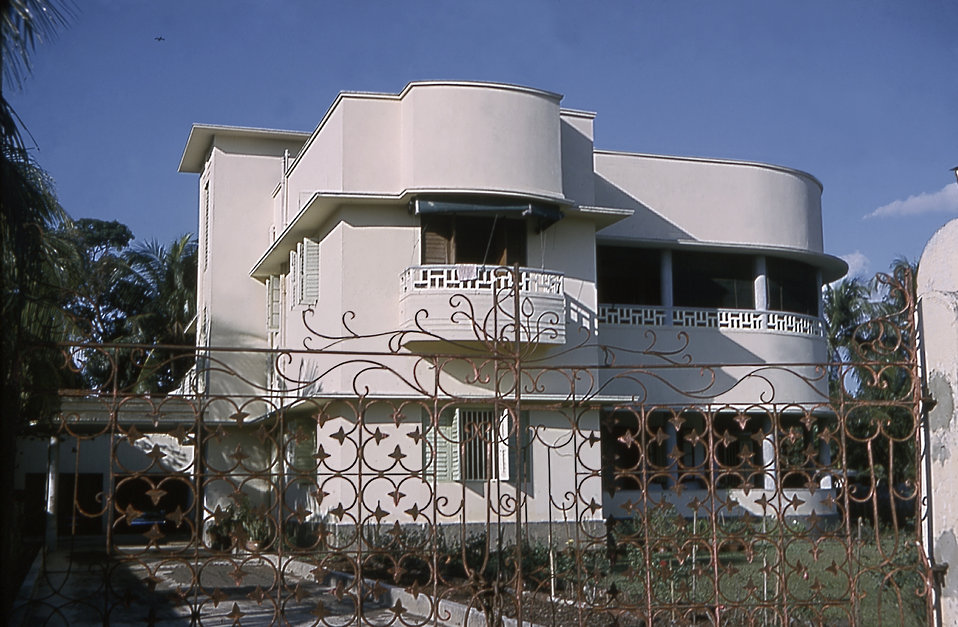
This 1964 image depicts the Old Reed Hill House located in Dacca, East Pakistan, which became Bangladesh after 1971.